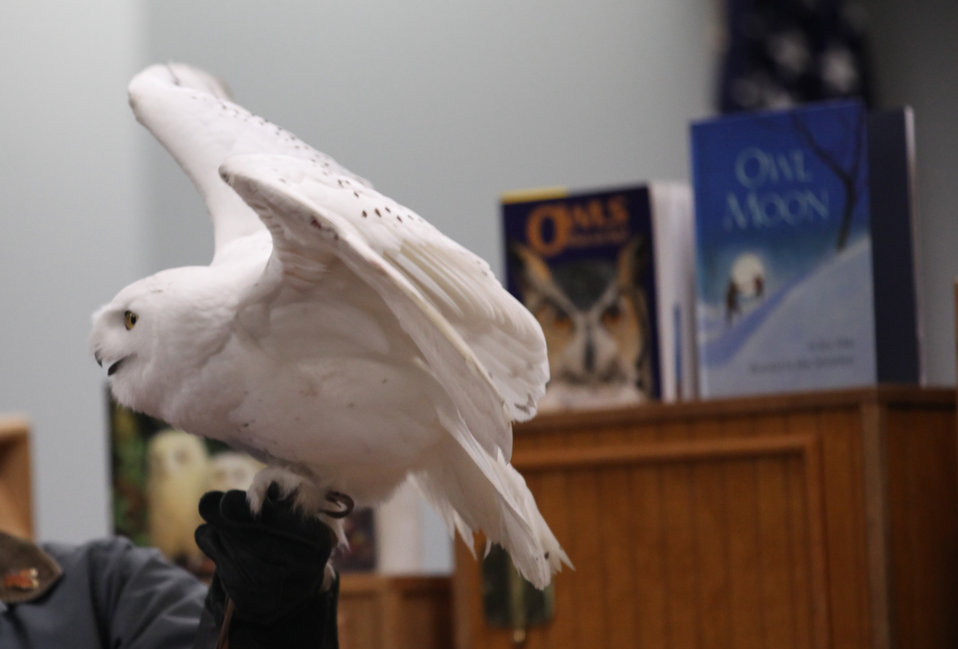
Snowy Owl at bird show during the fishing derby on May 7th.